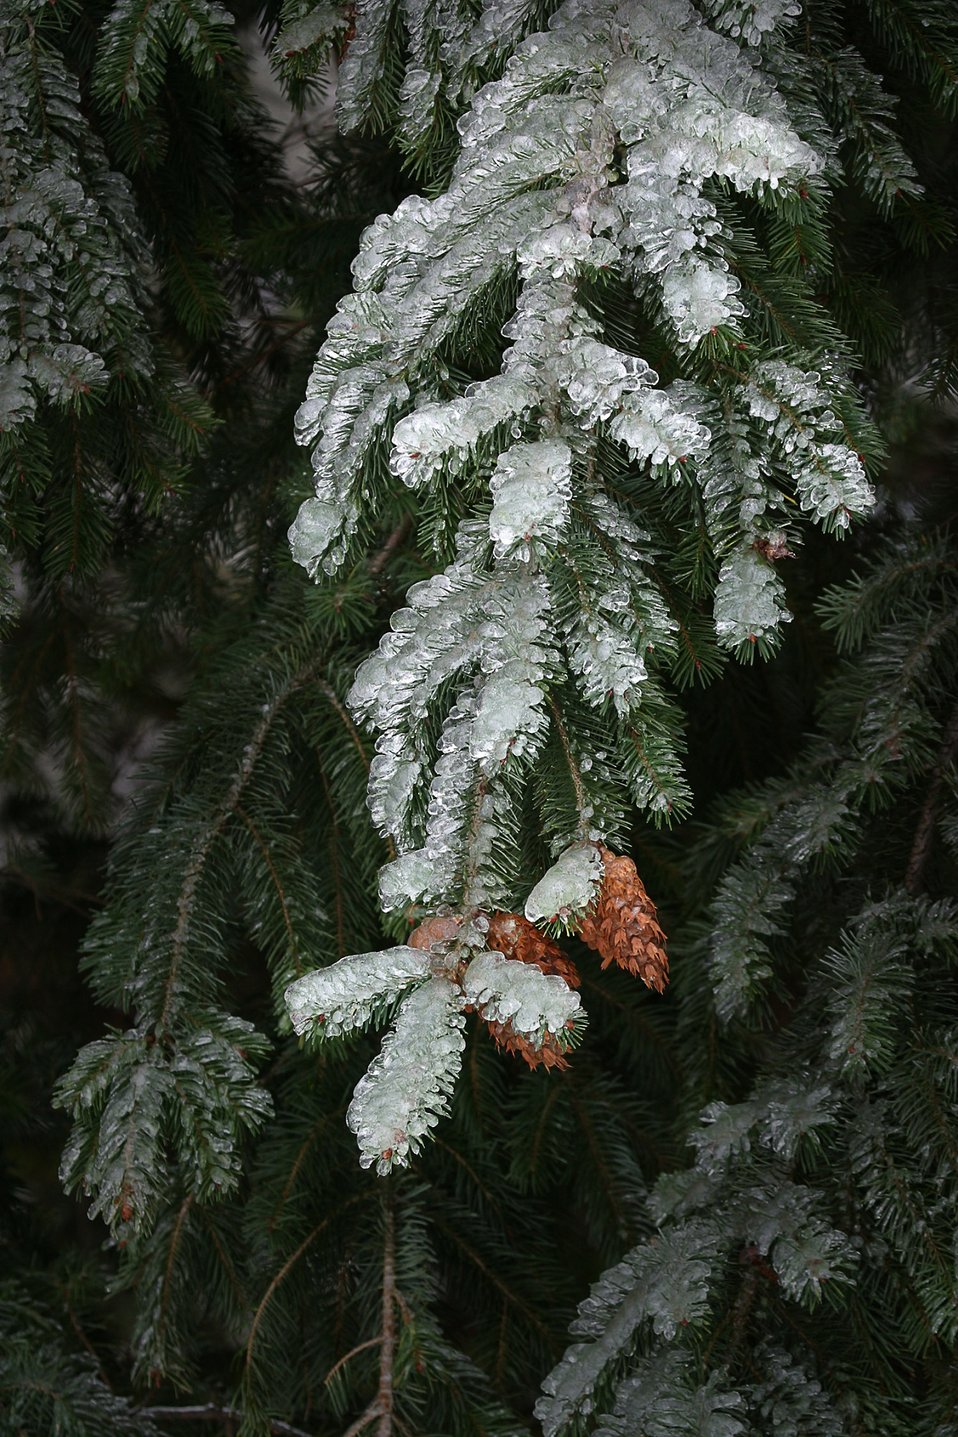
Snow and ice on Douglas Fir Bows and cones during the storm of January 2004.